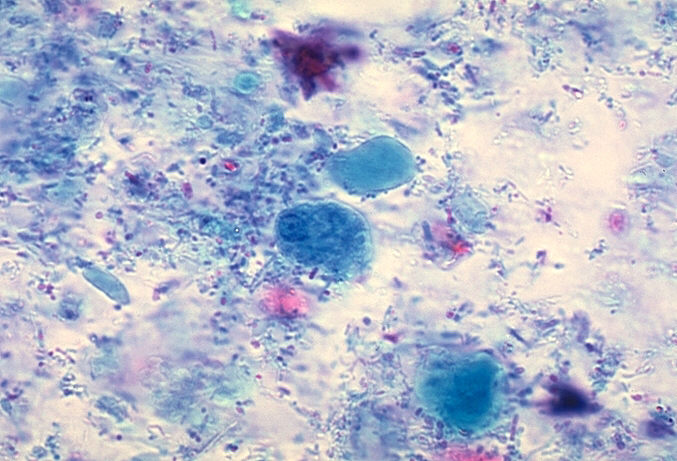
Entamoeba histolytica trophozoite. Wheatley's trichrome stain (blue filter).